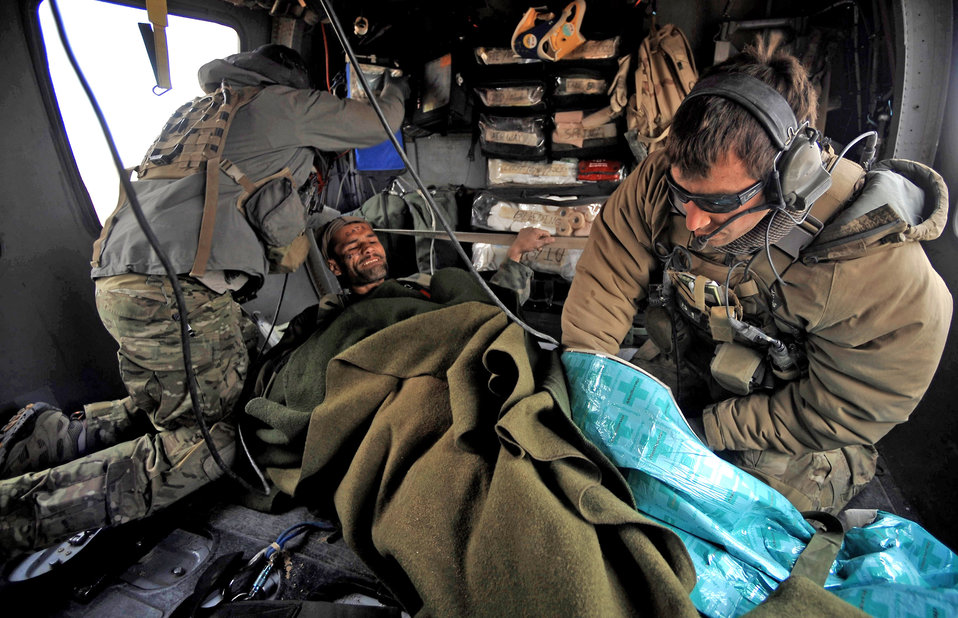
Squadron highlights capabilities during Afghan rescue mission

Pararescuemen provide medical attention to an Afghan who has suffered gunshot injuries, Dec. 08, 2009. The pararescuemen are able to rescue patients in any situation who need medical attention. The pararescuemen are assigned to the 66th Expeditionary Rescue Squadron deployed to Camp Bastion, Afghanistan.